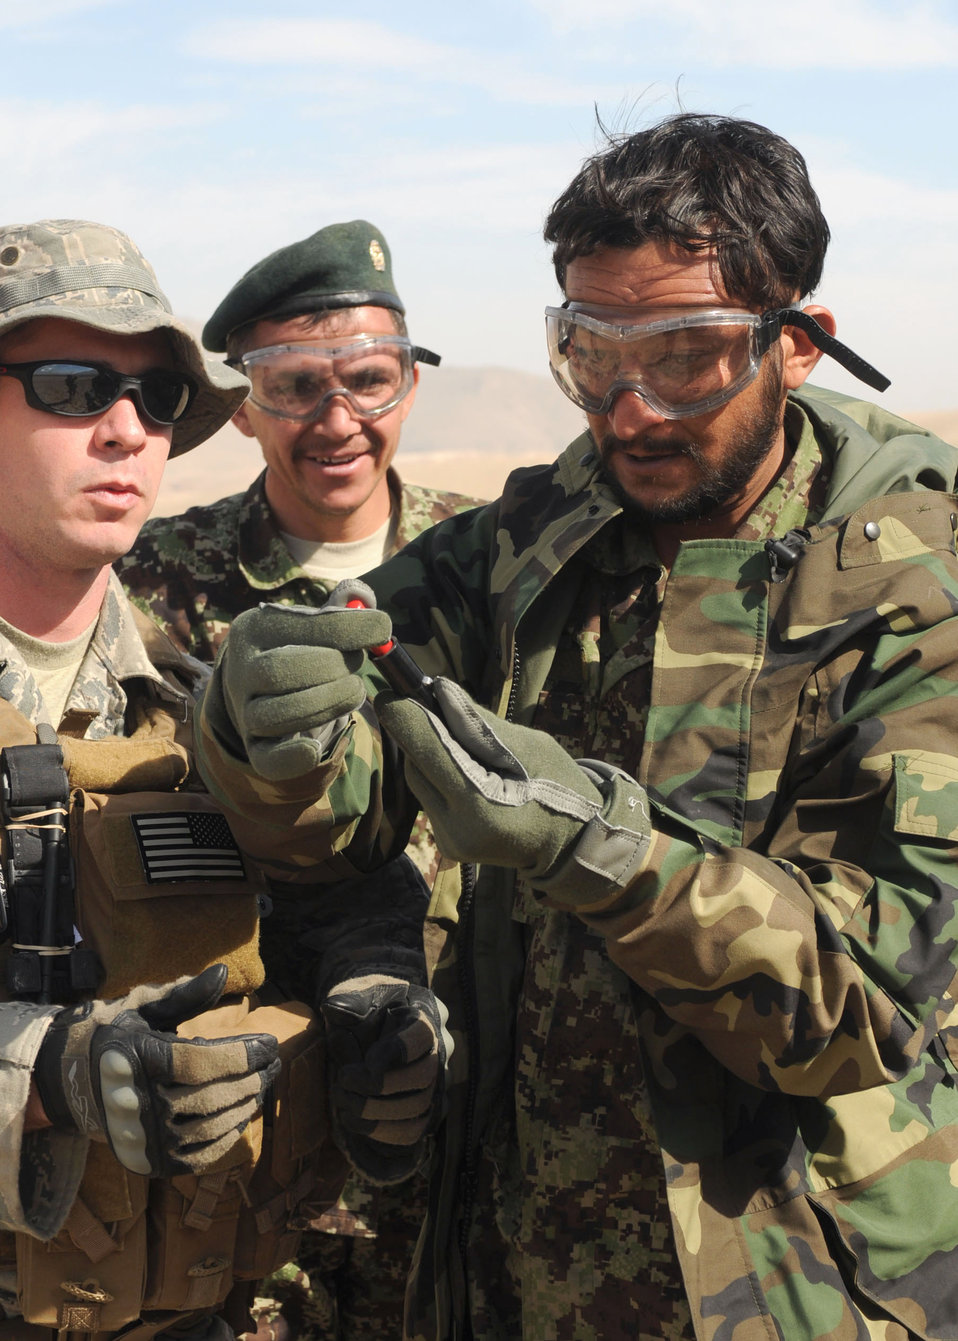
Signal training

Afghan life support airmen practice using signaling devices. They will begin teaching this skill to Afghan air force pilots so they know how to signal for rescue.